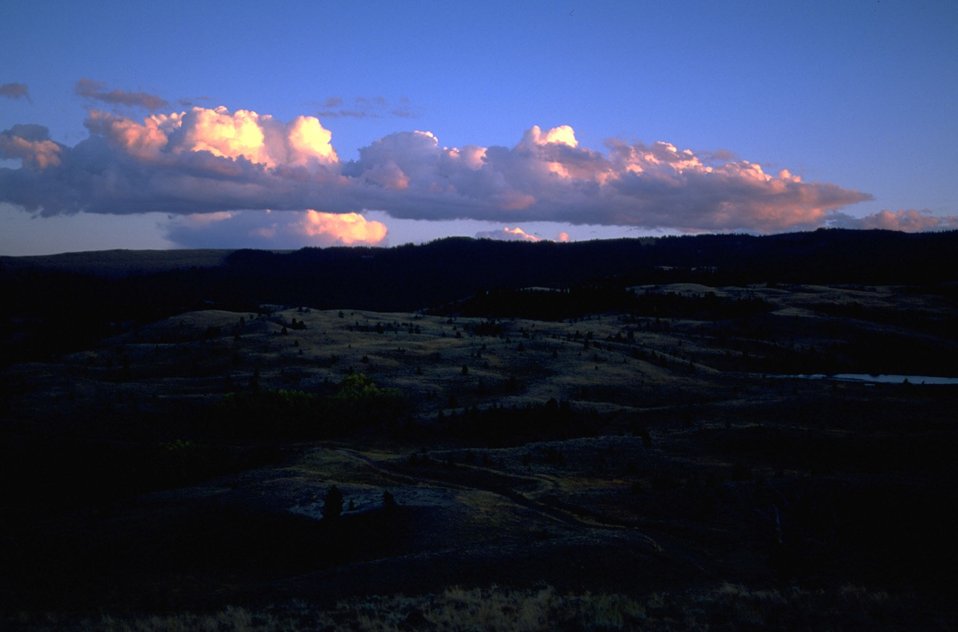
Clouds above forested ridge at sunset